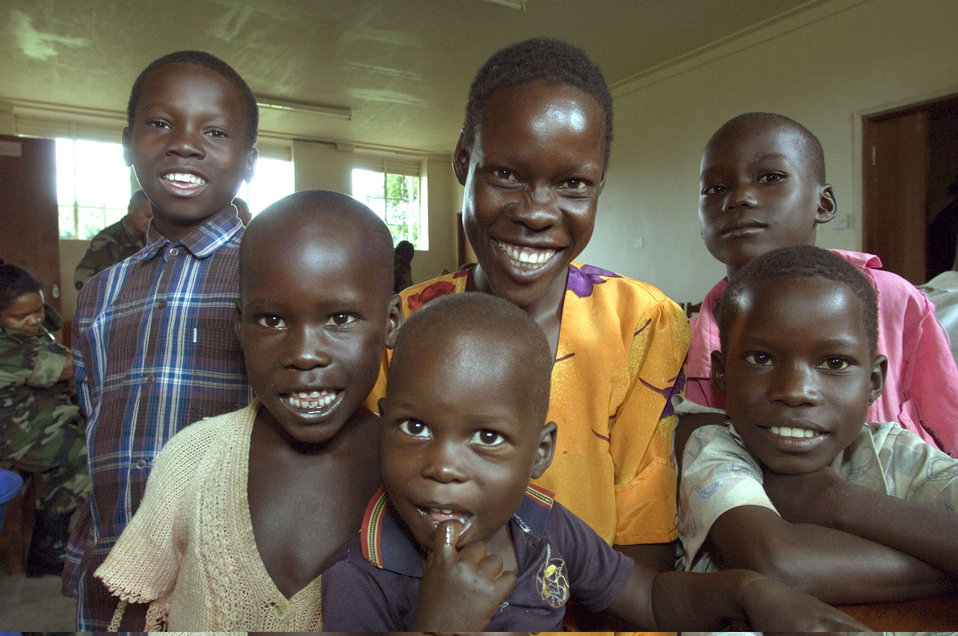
Natural Fire 2006

This mother of five brought her children to see a doctor during the training exercise Natural Fire 2006 in Serere, Uganda, on Aug. 9. Three East African nations and the United States are participating in the multilateral exercise that is providing medical, veterinary and engineering civil assistance.